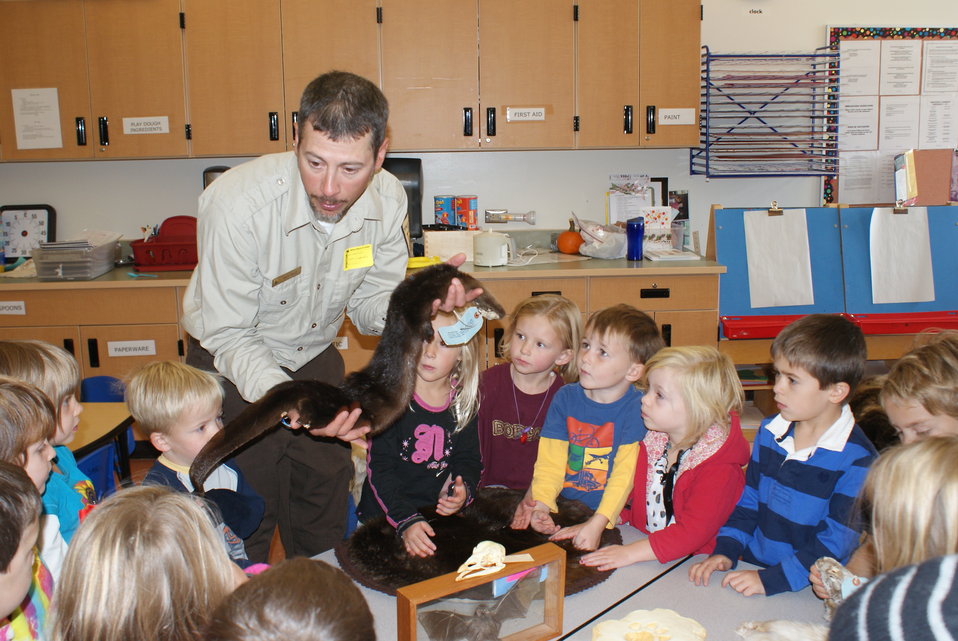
Scientists in the Community Program

U.S. Fish and Wildlife Service Mountain-Prairie Region Deputy ARD for External Affairs, Matt Kales, introduces early childhood education students at William Roberts Elementary School in Denver to some of Colorado's native and historic wildlife species.